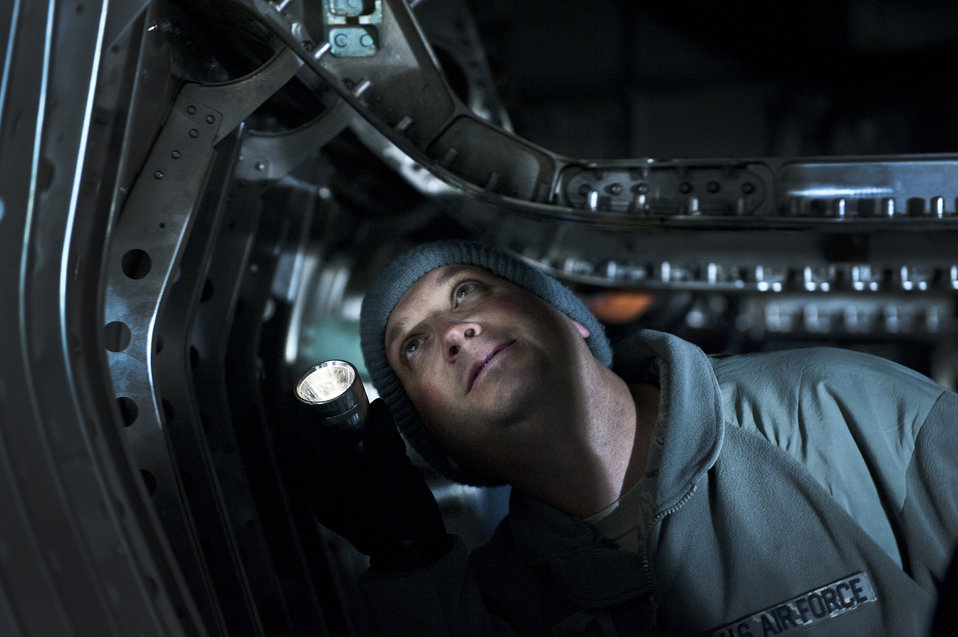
In inspection order

Tech. Sgt. Adam Howard inspects an F-15 Strike Eagle during the U.S. Air Force Weapons School mission employment exercise Dec. 6, 2011, at Nellis Air Force Base, Nev. Howard is a 57th Maintenance Squadron quality assurance inspector.